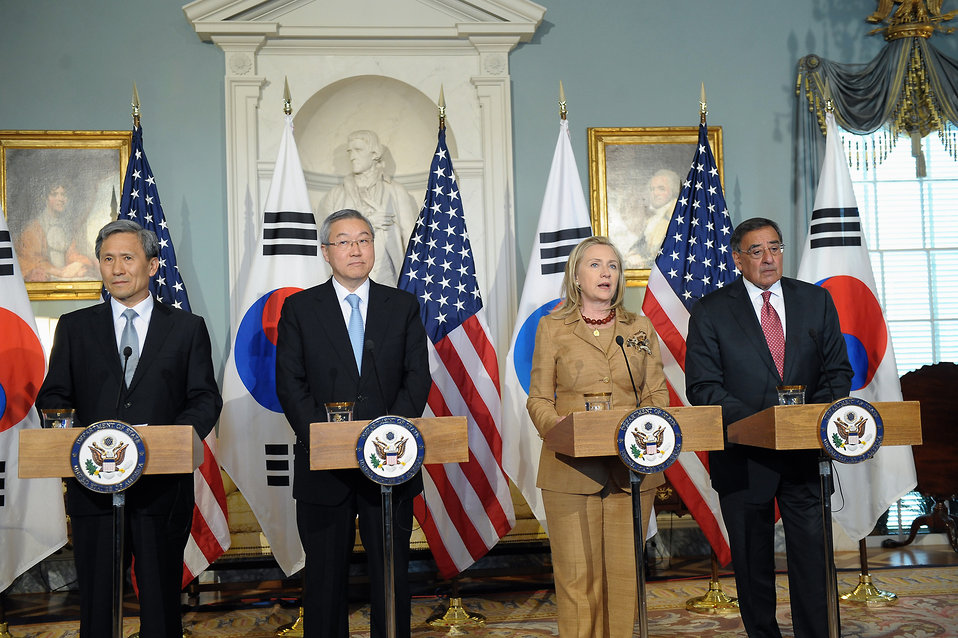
Secretary Clinton Delivers Remarks at a U.S.-Republic of Korea Press Availability

U.S. Secretary of State Hillary Rodham Clinton delivers remarks at a press availability with Secretary of Defense Leon Panetta, Minister of Foreign Affairs and Trade of the Republic of Korea Kim Sung-Hwan, and Minister of National Defense of the Republic of Korea Kwan-Jin at the U.S. Department of State in Washington, D.C. on June 14, 2012.